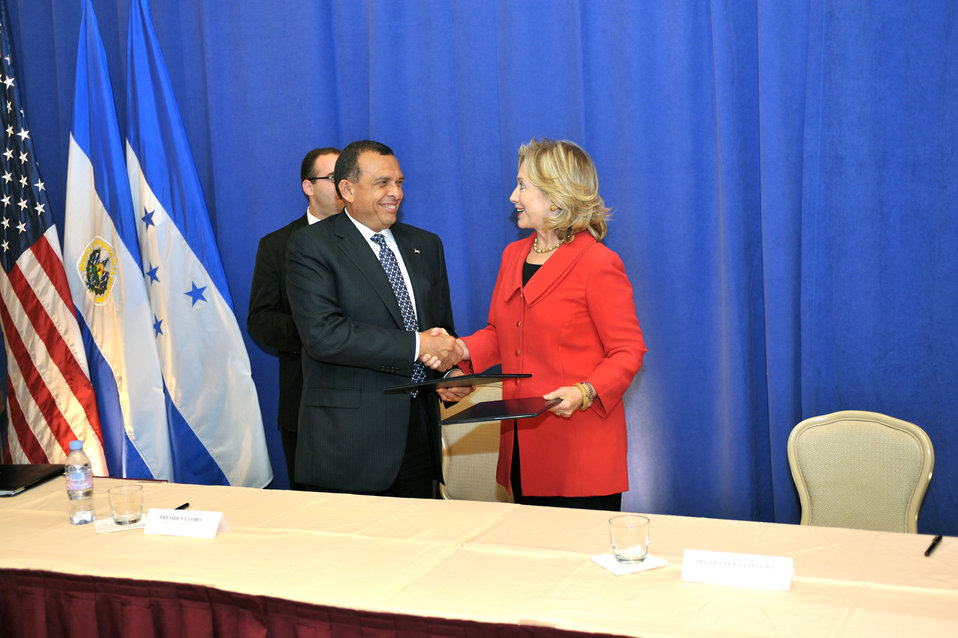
Secretary Clinton and Honduran President Lobo Shake Hands

U.S. Secretary of State Hillary Rodham Clinton and Honduran President Lobo shake hands after signing a memorandum of understanding for the Building Remittance Investment for Development Growth and Entrepreneurship (BRIDGE) Initiative with Honduras and El Salvador at the Helmsley Hotel in the Turtle Bay Room in New York, New York, on September 22, 2010.